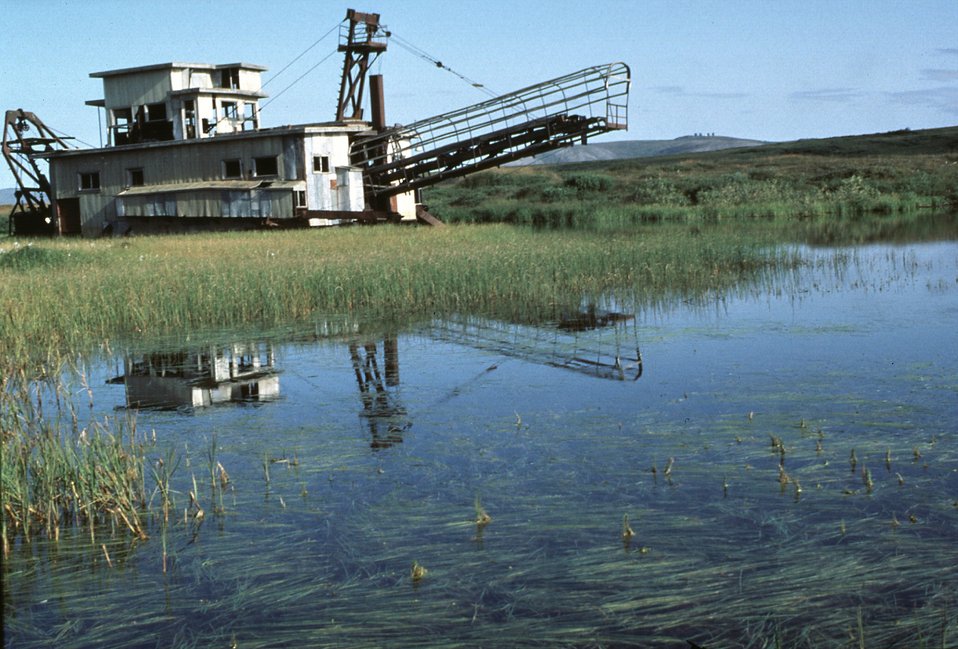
Historic gold dredge, Seward Peninsula